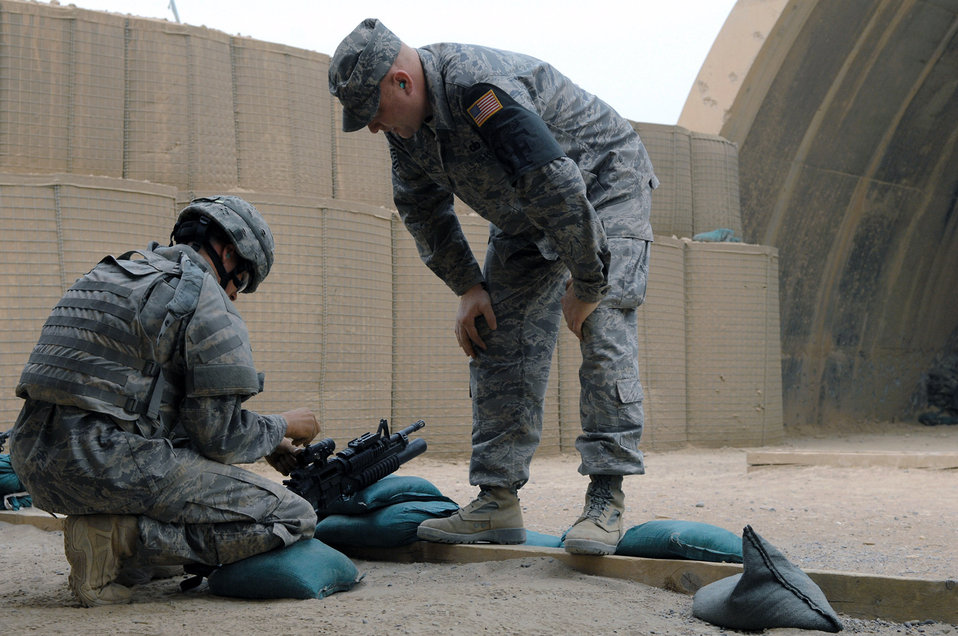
Zeroing in

Tech. Sgt. Steven Boling watches and assists Airman 1st Class Darryl Worthey as he sights in his scope April 30 at Balad Air Base, Iraq. Every person has a slightly different defensive fighting position so each weapon must be adjusted to the shooter. Sergeant Boling is deployed from Buckley Air Force Base, Colo., and Airman Worthey is deployed from Mountain Home AFB, Idaho. Both are assigned to the 332nd Expeditionary Security Forces Squadron.